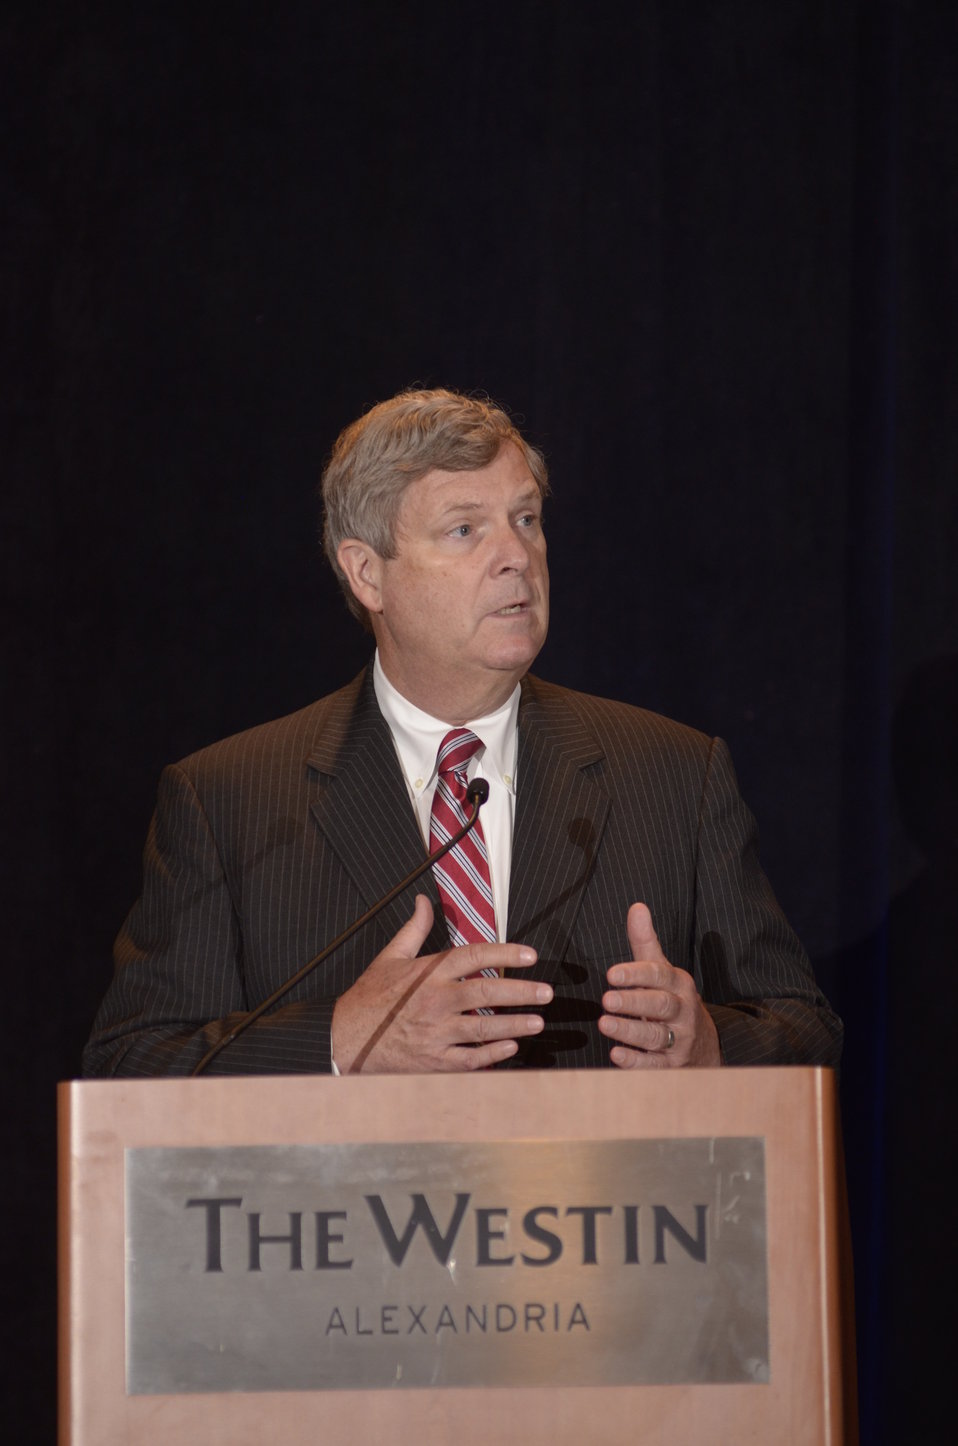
Agriculture Secretary Tom Vilsack presents keynote remarks at the U.S. Agricultural Export Development Council (USAEDC) Attaché Seminar, at the Westin Alexandria, in Alexandria, VA, on Wednesday, July 10, 2013. USAEDC is a non-profit private sector trade association that provides an exchange and coordination of information to promote the export of the products of U.S. agriculture. Their membership includes U.S. commodity trade associations, farmer cooperatives and state regional trade groups from around the country. In the interest of U.S. agricultural growers and producers their export promotion efforts, work in conjunction with the U.S. Department of Agriculture Foreign Agricultural Service.